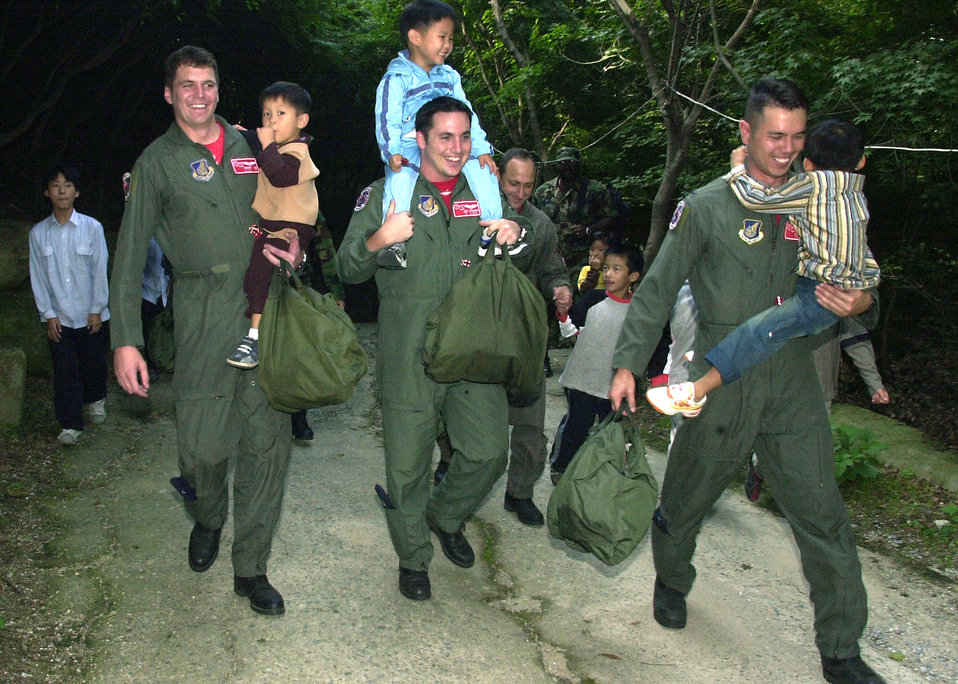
Deployed Airmen visit South Korean orphanage

GWANGJU, South Korea -- (Left to right) Capt. Robert Lee and 1st Lts. Richard Stringer and Josh Cummings carry children during a visit to a local orphanage Sept. 24. Captain Lee and Lieutenant Stringer are 3rd Air Expeditionary Fighter Squadron F-15E Strike Eagle pilots, and Lieutenant Cummings is a 3rd AEFS weapons system officer.